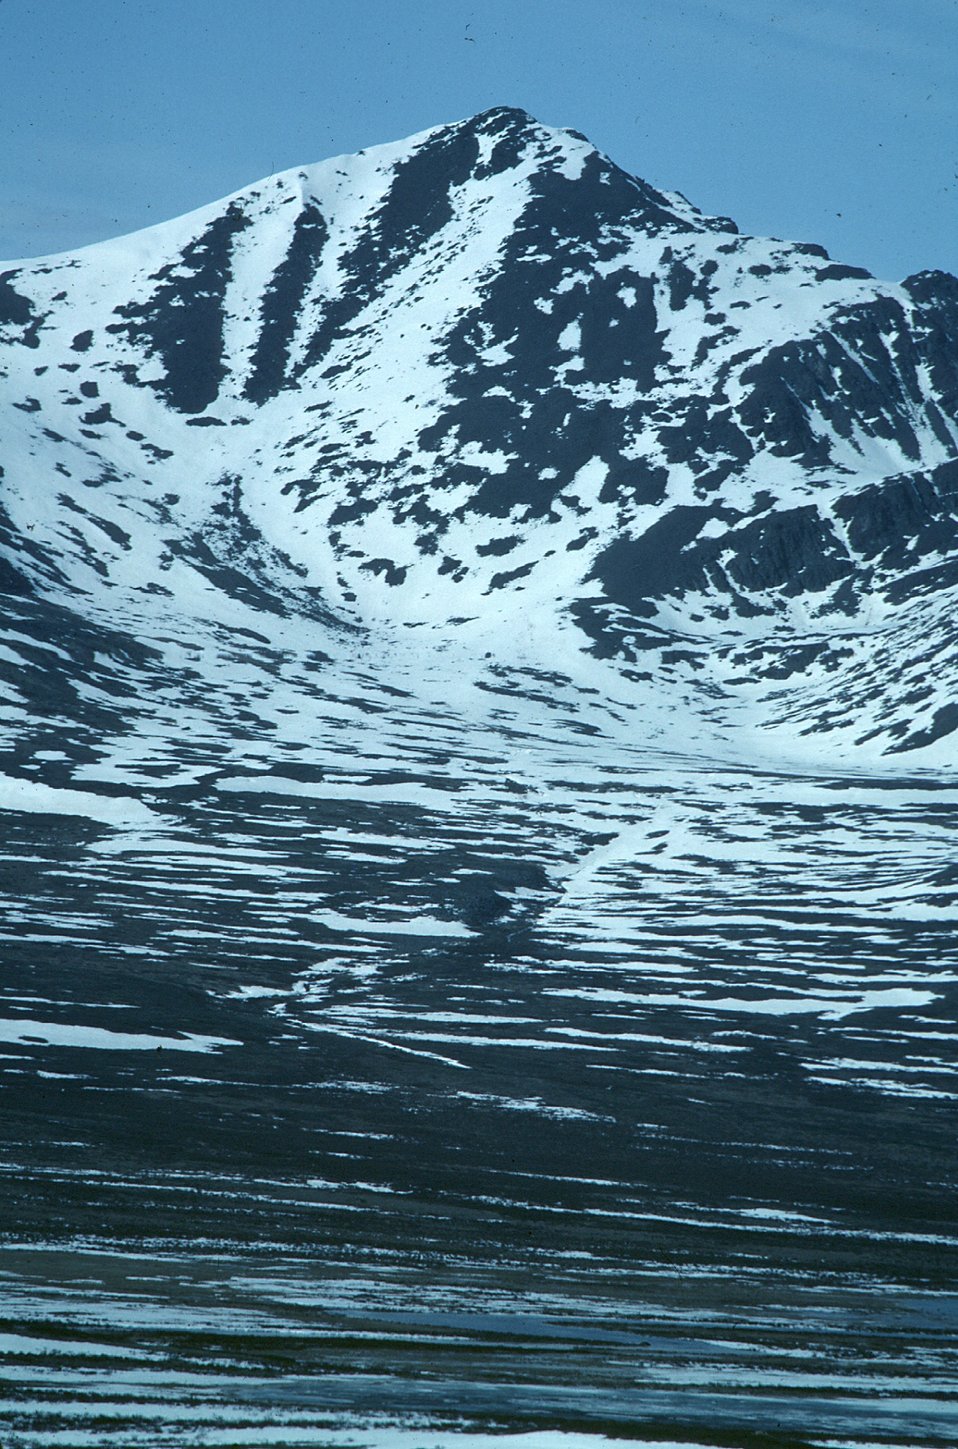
Snow capped peak on Denali Highway, Alaska